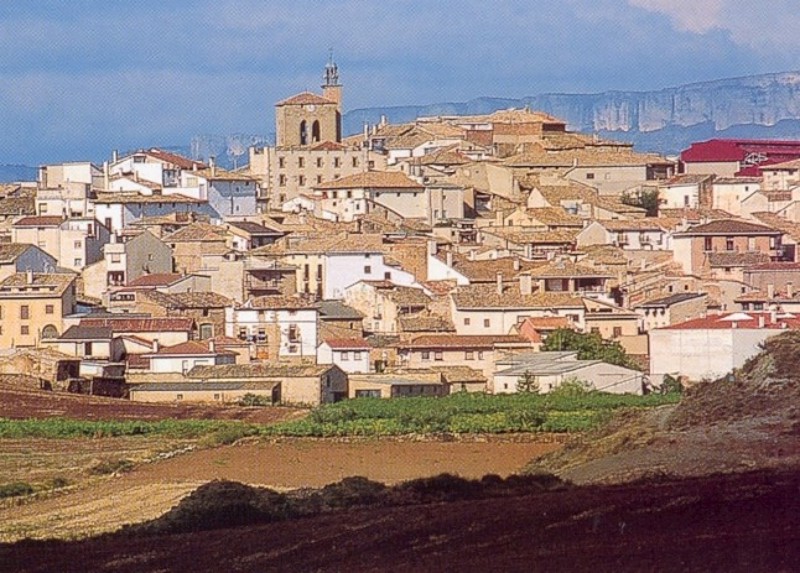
023 Cirauqui village